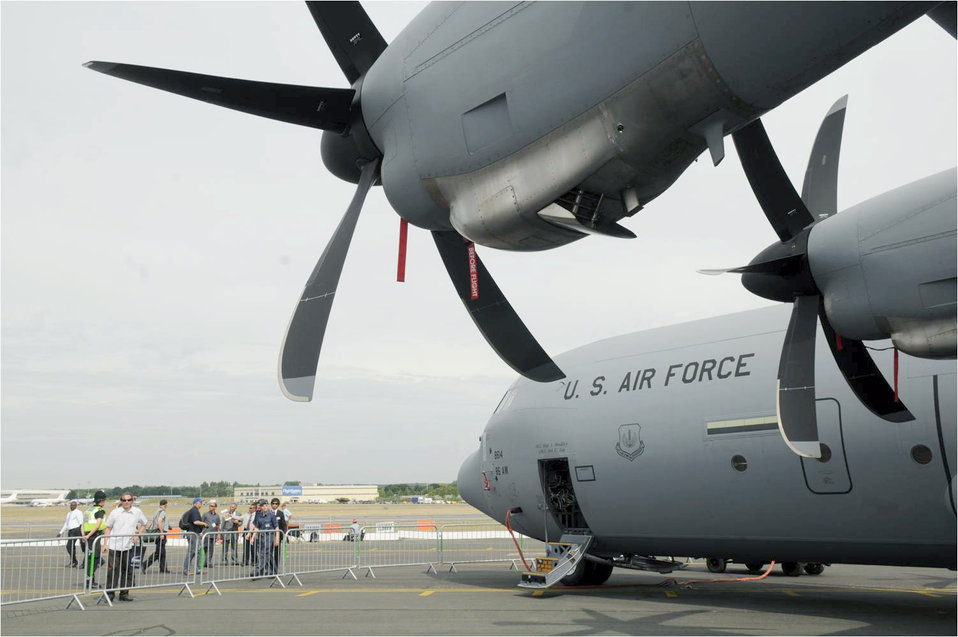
C-130J at Farnborough 2010

Spectators view a C-130J Super Hercules from Ramstein Air Base, Germany, at the 2010 Farnborough International Air Show July 20, 2010, in Farnborough, England.